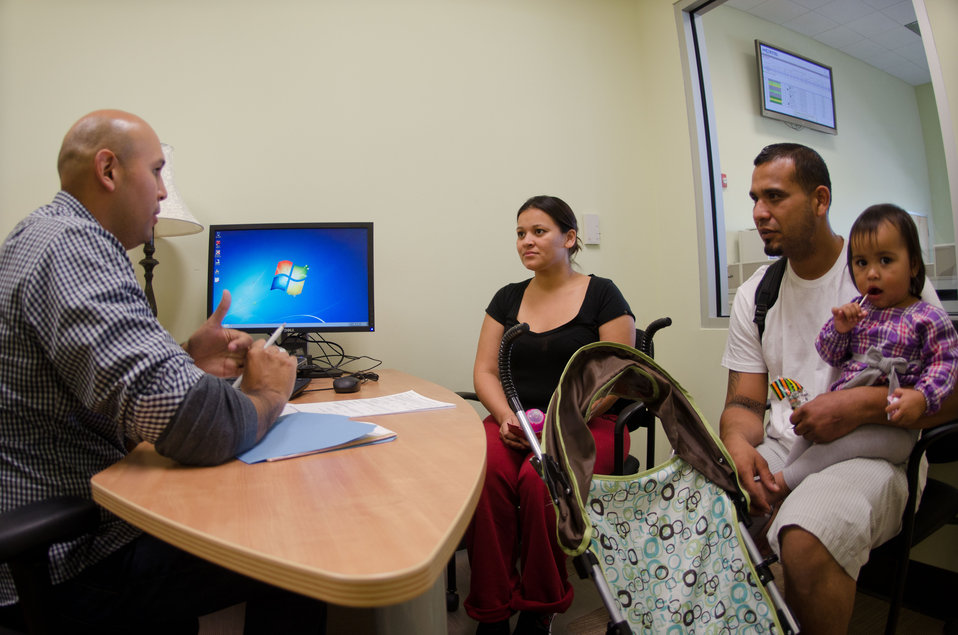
“You should never be too prideful to ask for assistance …” said Olivia Hernandez (second from left), on Monday, October 31, 2011, in the San Antonio Food Bank (SAFB) Outreach Office, when asked about what others should keep in mind when faced with a crisis such as the one Cesar Trevino (second from right), daughter Lana (right, 1 yr. old) and she did the prior evening, when a distant apartment unit caught fire, spreading smoke and flames throughout the building, eventually consuming their Texas apartment as well. Left with the clothes they are wearing they were referred to the San Antonio Food Bank where they sat down with Outreach Specialist Seth Villalobos (left) who listened and determined what their immediate needs were. Villalobos talked about the programs that could address their needs, and benefits that could help them rebuild their lives. During this initial visit, they applied for Children’s Medicaid and Women, Infants & Children (WIC) benefits, later they were briefed about the United States Department of Agriculture’s Supplemental Nutrition Assistance Program (SNAP) and the Federally funded, state administered Temporary Assistance for Needy Families Benefits (TANF) as well as other Federal and State programs. At the end of their meeting Hernandez said, “It was super-easy, very friendly staff.” And Trevino added, “great service.” Later that day, Villalobos made a personal trip to this family’s temporary home to deliver a box of groceries to make their first evening a little easier. In the box were provisions from the USDA and other contributors to SAFB.
San Antonio Food Bank is a non-profit organization that serves as a clearinghouse receiving and storing truckloads of donated food, produce, and other grocery. SAFB distribute these items to over 500 service agencies that help people in need.
“We couldn’t do what we do without our partnership with USDA’” said President and CEO Eric Cooper. SAFB serves 16 counties in Southwest Texas and states, “Nearly one out of every four children and one out of every five adults in Southwest Texas lives in poverty and has difficulty meeting basic nutritional needs.” According to SAFB, sixty-five percent of the people requesting emergency food have children. USDA photo by Lance Cheung.
www.fns.usda.gov/fns/
www.fns.usda.gov/snap/ www.fns.usda.gov/fdd/programs/tefap/